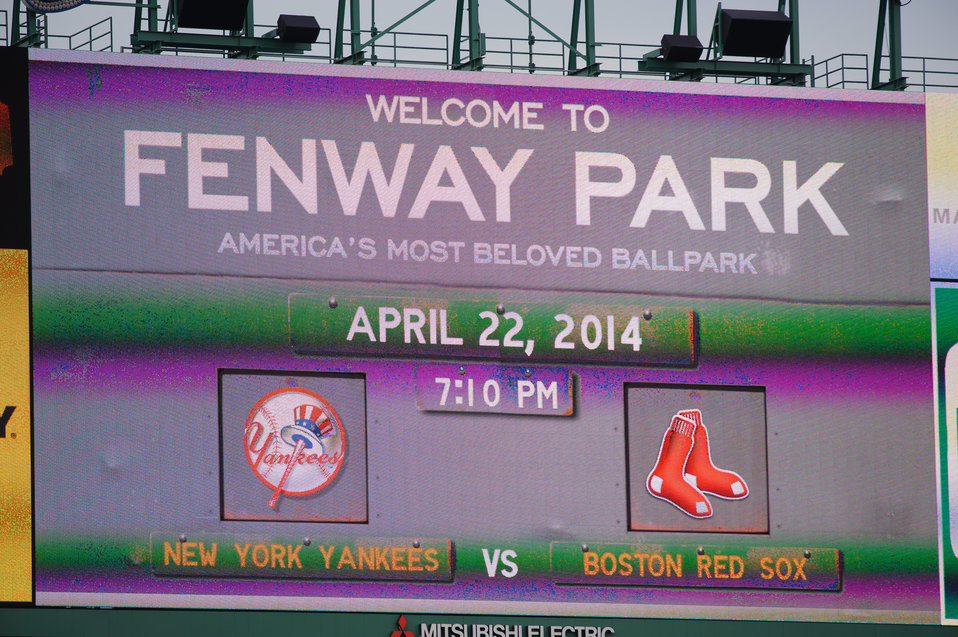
2014-04-22 boston 055